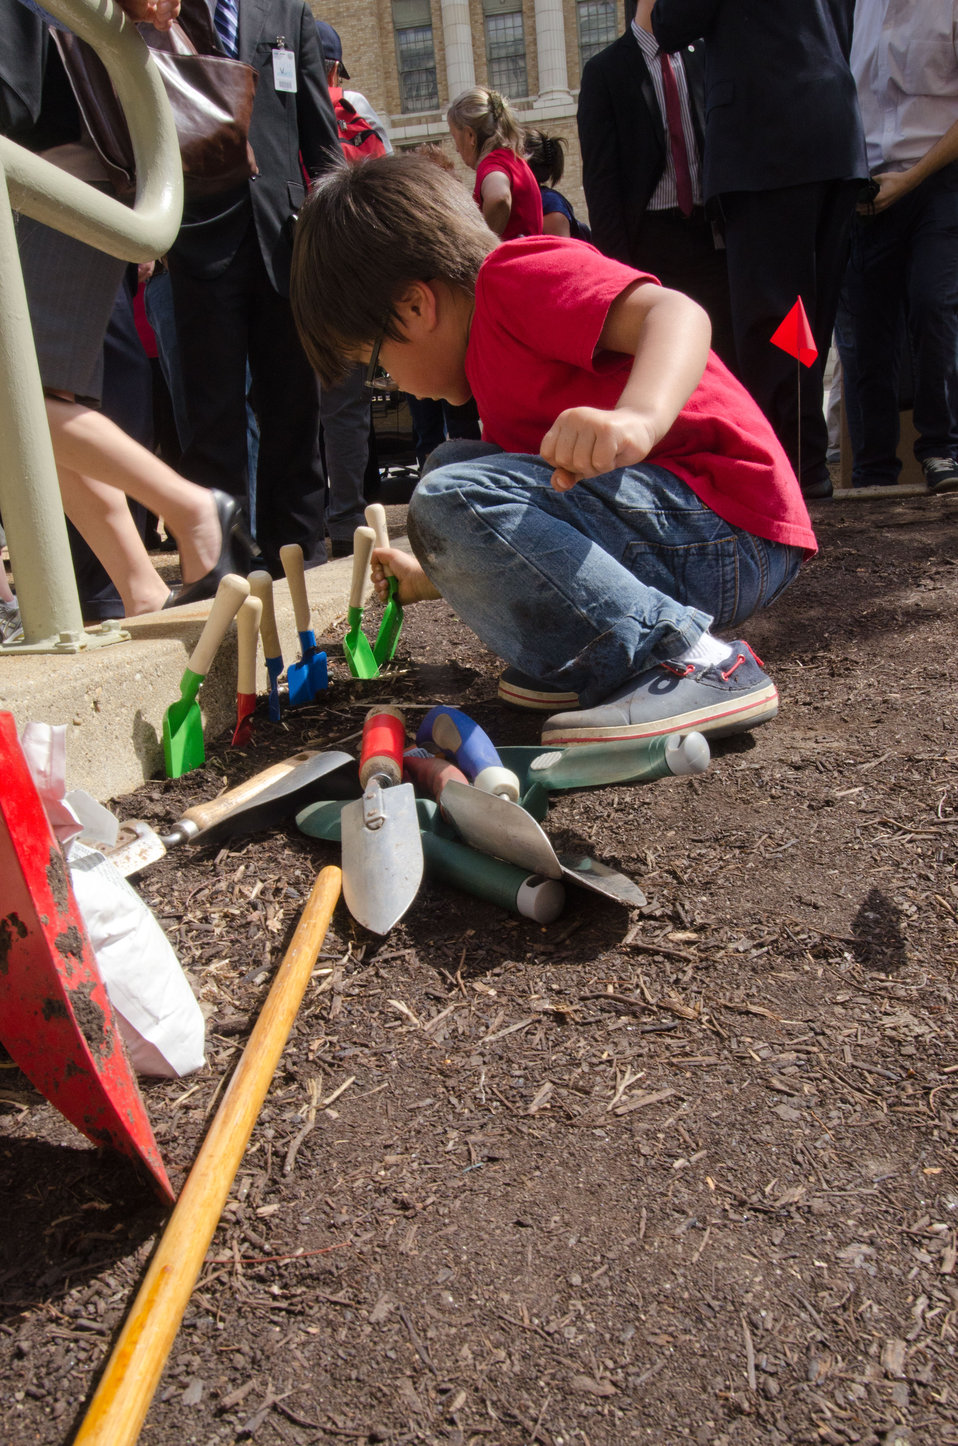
Agriculture Secretary Tom Vilsack may be a few steps away, but this young gardener saw a task that needed to be done in Washington, DC on Wednesday, April 27, 2011. He is one of more than 30 students from Eastern and Western Tribes, Southeast Alaska, and Tuba City, Arizona who came to the U.S. Department of Agriculture headquarters to plant vegetable seeds in The Roots of American Agriculture garden, part of the Headquarters’ People’s Garden.)